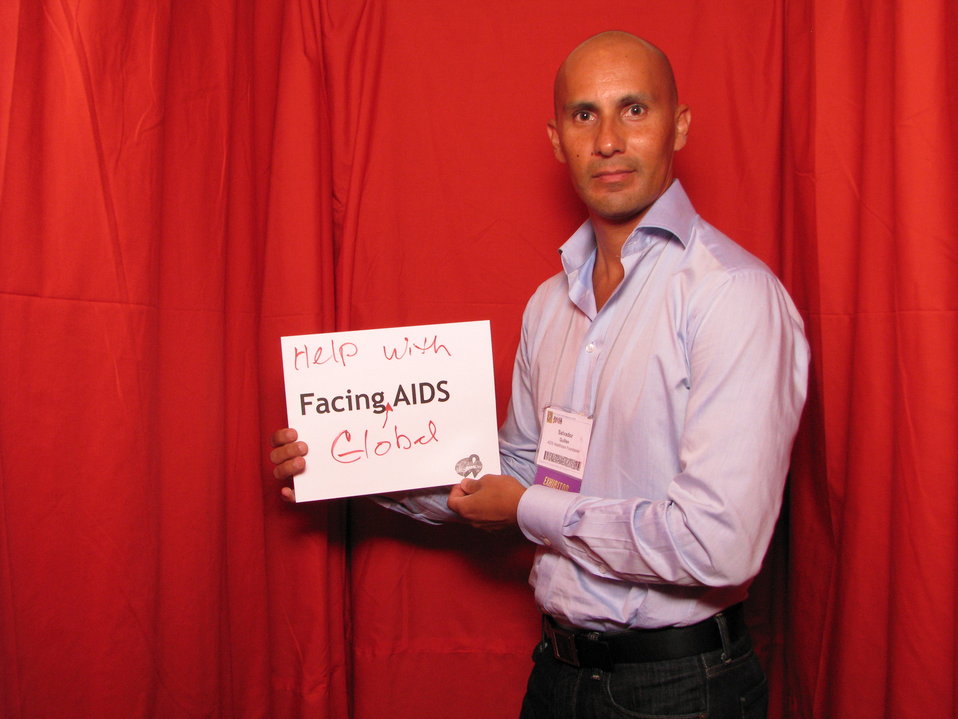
Help with FACING Global AIDS.

From the AIDS.gov photo booth at the U.S. Conference on AIDS, September 2010 (Orlando, FL).